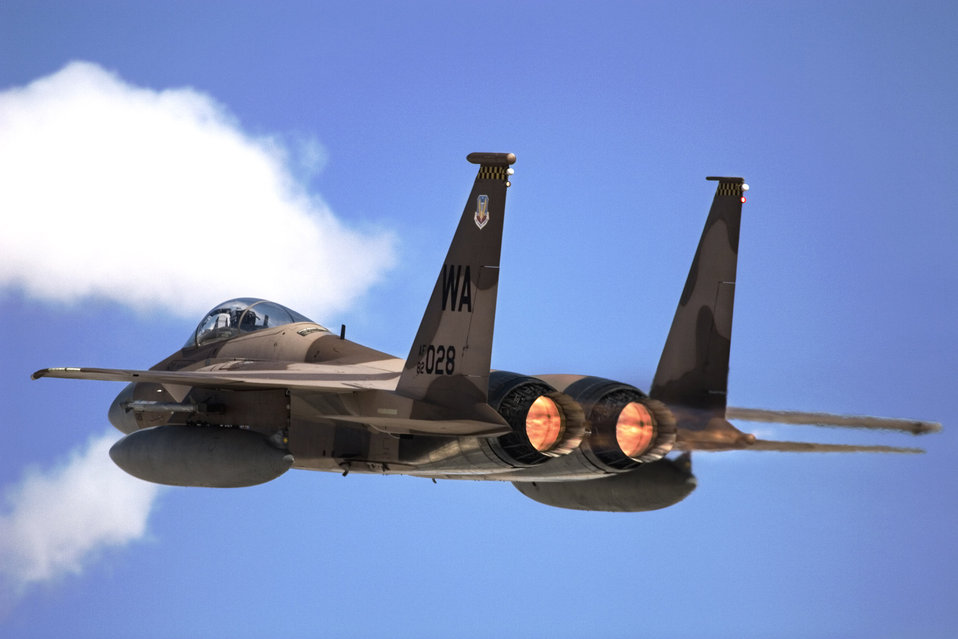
Air Force proposes adding 23 F-15s, F-16s at Nellis

An F-15 Eagle with the 65th Aggressor Squadron takes off from Nellis Air Force Base, Nev. Twenty-three additional F-15 Eagles and F-16 Fighting Falcons are being proposed by the Air Force to be added to Nellis AFB in addition to approximately 520 people due to changes mandated by the recent Base Realignment and Closure Commission.